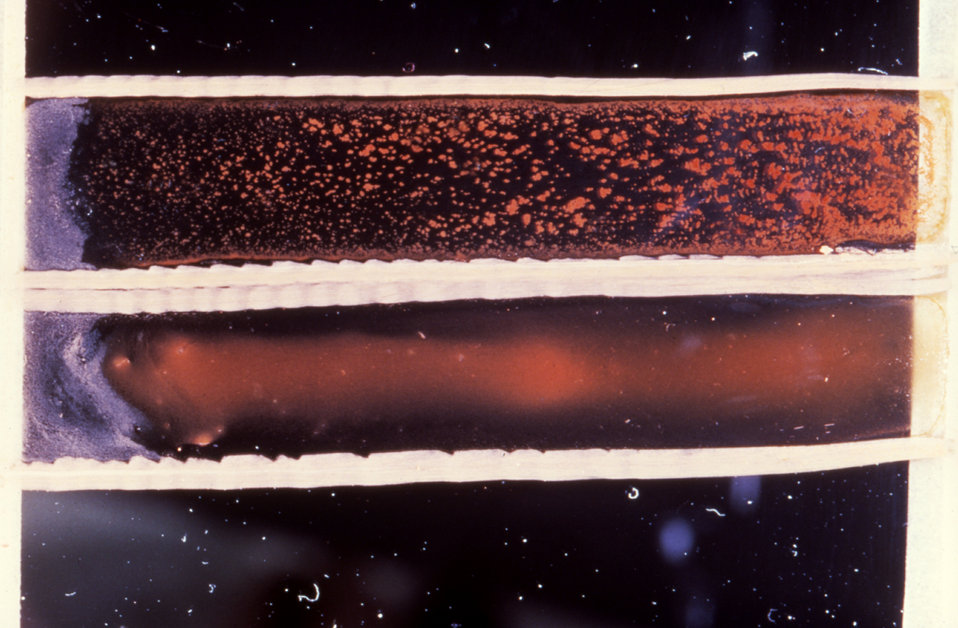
This was a chick RBC test on a slide used in the diagnosis of cholera.